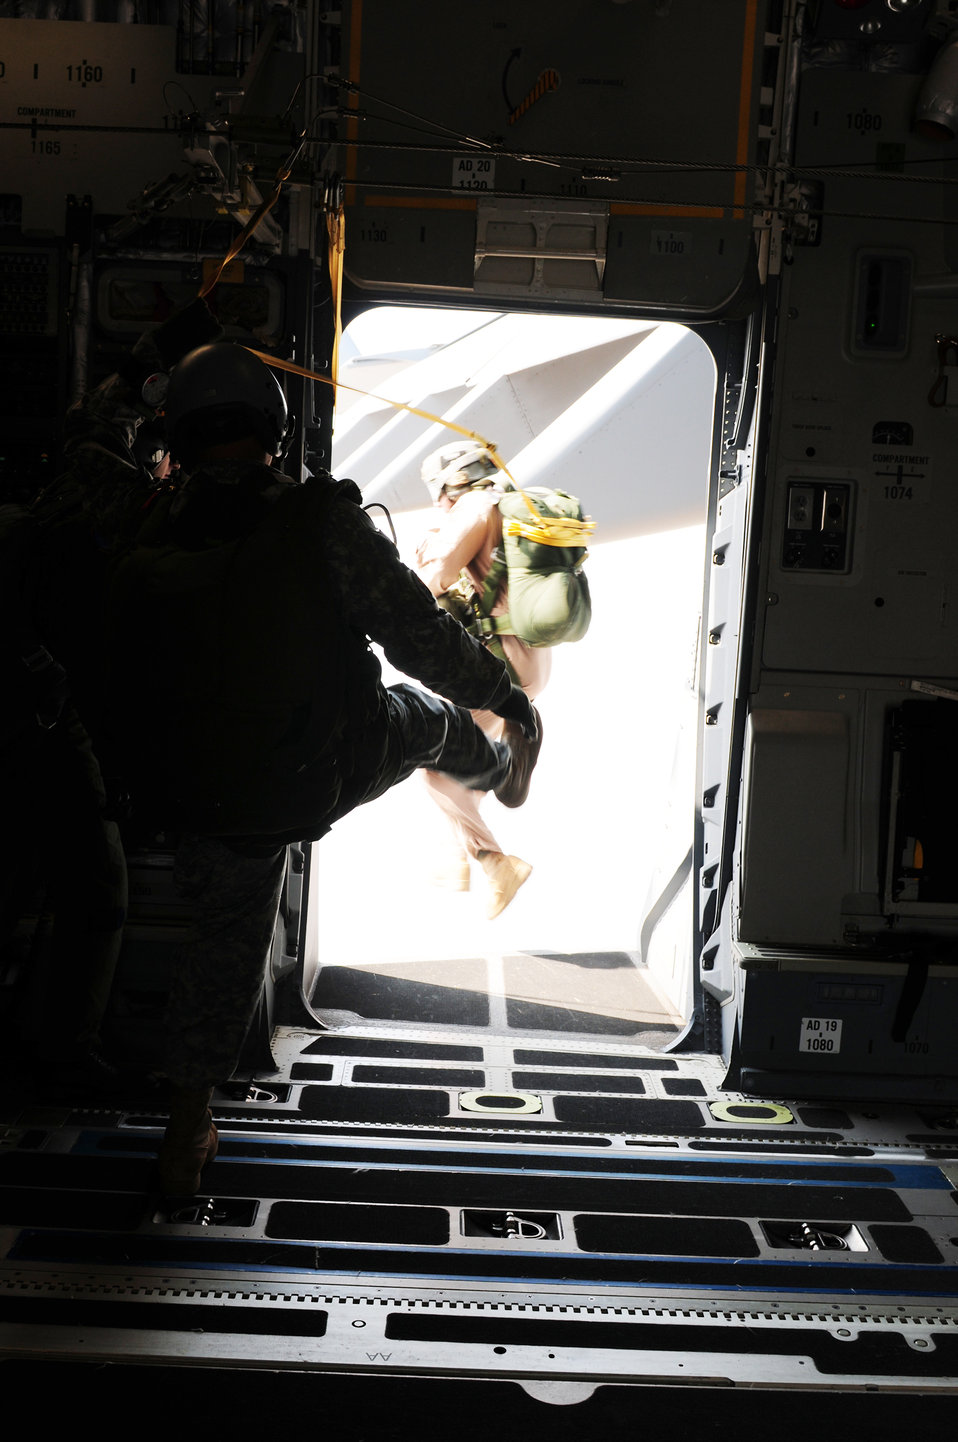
Cope India dubbed a success

Tech. Sgt. John Gaona executes a static jump out of a C-17 Globemaster III Oct. 23, 2009. Sergeant Gaona was a jumpmaster during Cope India. Cope India is a United States and India airlift exercise that provides training for humanitarian assistance and disaster relief operations.